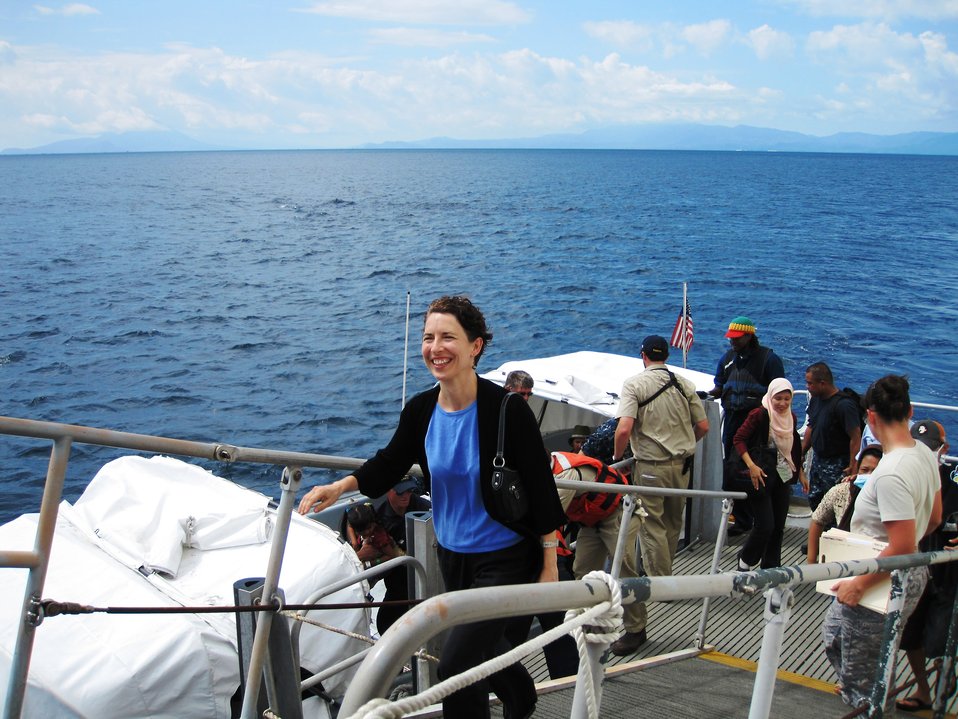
U.S. Consul General Bauer Arrives on the USNS Mercy

U.S. Consul General in Surabaya Kristen Bauer arrives on the USNS Mercy during Pacific Partnership 2010's visit to Ternate, Indonesia, on July 17, 2010.